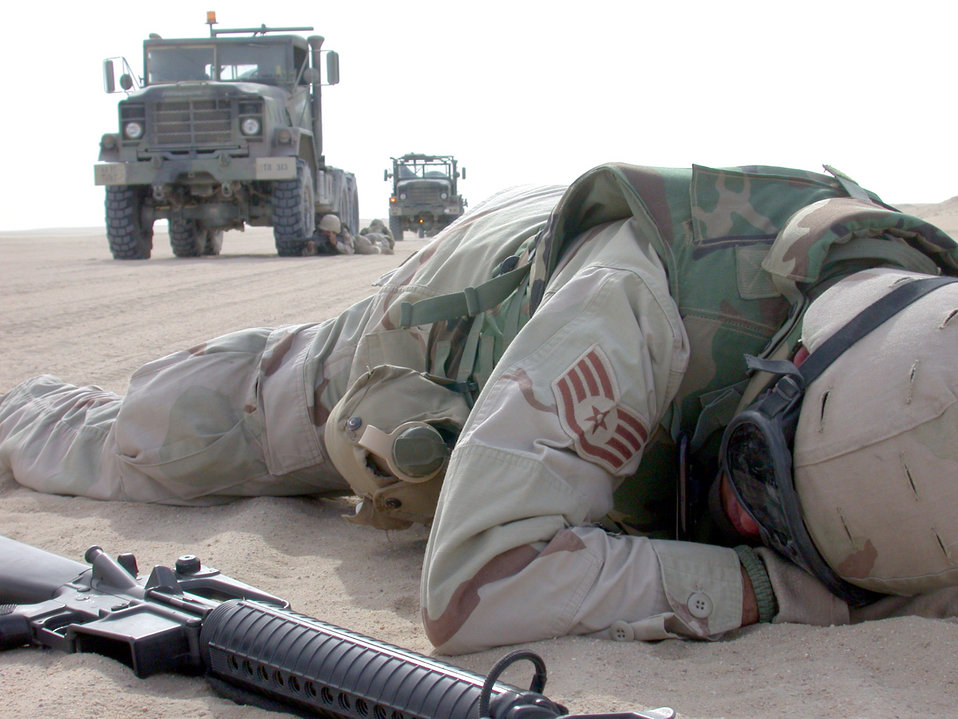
Airmen learn convoy skills